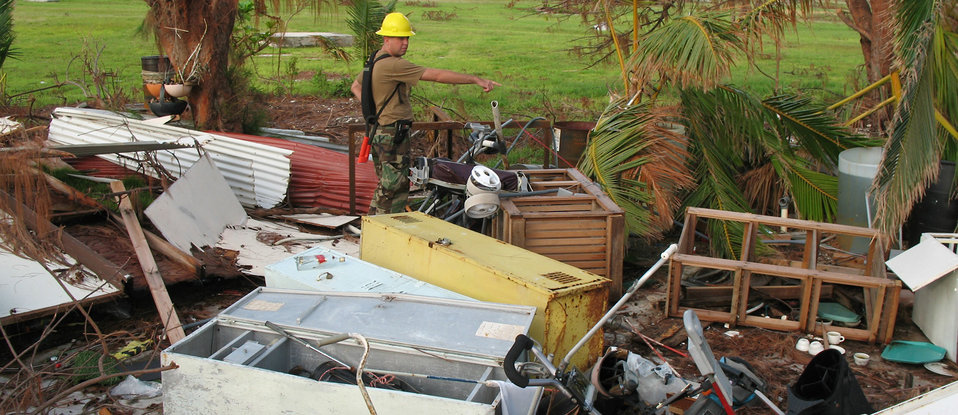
Airmen add up damage at Wake Island

Tech. Sgt. Dennis Tye points out things of note to other members of the 15th Airlift Wing's damage assessment team at Wake Island Sept. 15. The team was sent from Hickam Air Force Base, Hawaii, to estimate the cost of damage left by Super Typhoon Ioke, which swept through the atoll Aug. 31.